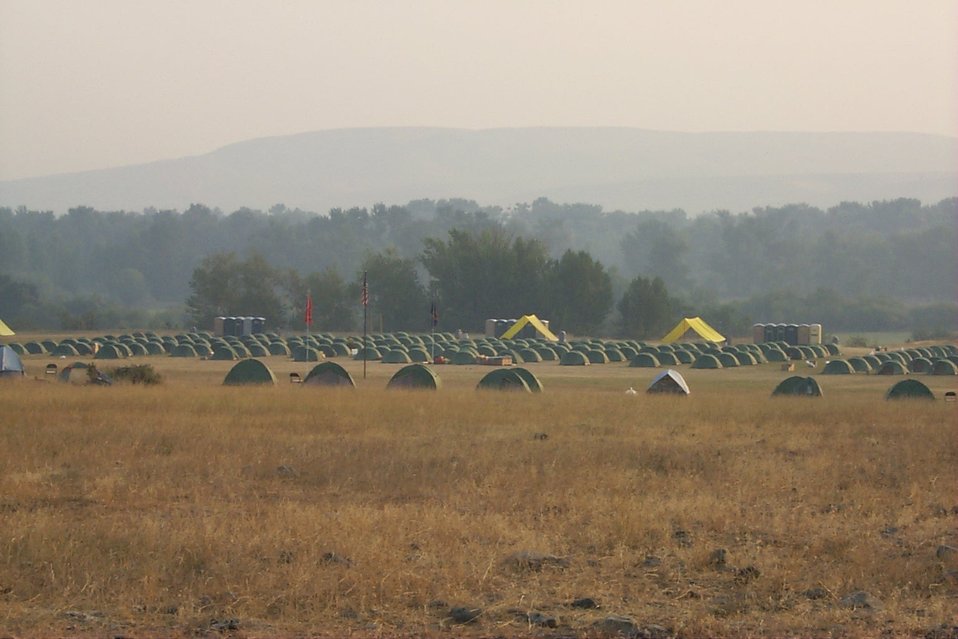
Camp Fire Clearwater Fire Salmon Field Office USRD Upper Snake River District